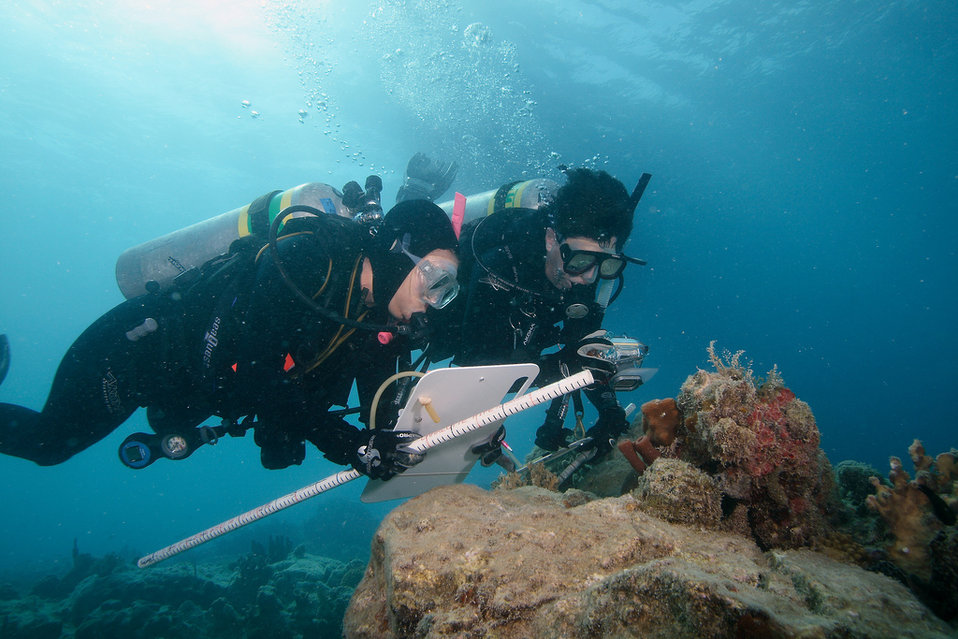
Studying Coral Health in St. Thomas, USVI

Coral reefs are among the world's richest ecosystems, second only to tropical rain forests in plant and animal diversity.

They are also extremely sensitive environments that have special temperature, salinity, light, oxygen, and nutrient needs. If environmental conditions shift or worsen from pollution or other disruption, the health of a coral reef ecosystem can suffer. EPA divers Becky Hemmer and Mel Parsons record observations on coral condition.

Learn more @ www.epa.gov/bioindicators/coral/index.html

These divers are from Region 2, where EPA more locally serves New Jersey, New York, Puerto Rico, the U.S. Virgin Islands and eight tribal nations.